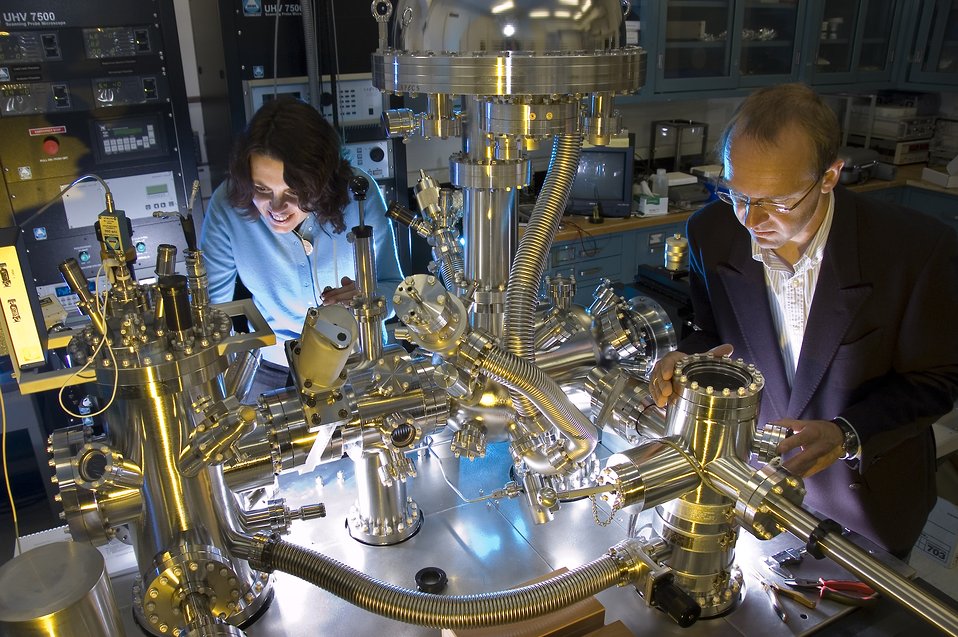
Brookhaven National Laboratory researchers have shown that tiny droplets of liquid metal freeze much differently than their larger counterparts.

Melting and crystallization are so-called phase transformations-fundamental processes by which most substances change between a disordered liquid state. (e.g. liquid water) and an ordered solid state (e.g. ice). When a liquid droplet is cooled, the motion of its atoms gradually slows until they come to a stop, resulting in a solid. For large droplets, this crystallization usually starts at a small impurity (e.g. speck of dirt), from which it rapidly spreads over the entire droplet. BNL is one of five nanoscale science research centers being constructed at national laboratories by the DOE's Office of Science to provide the nation with resources unmatched anywhere else in the world for synthesis, processing, fabrication, analysis at the nanoscale.